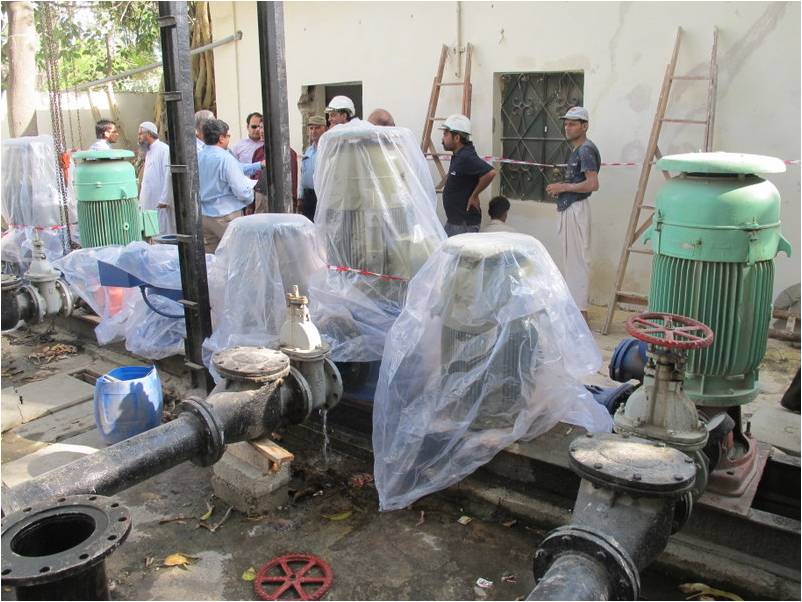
Technical experts at the site along with the new equipment